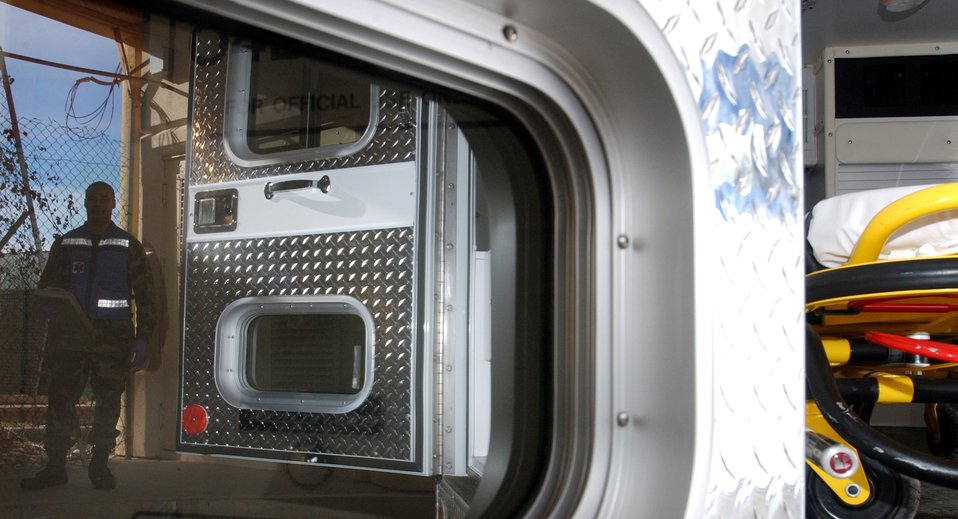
EMT ready

AVIANO AIR BASE, Italy -- Staff Sgt. Donelle Clark checks paperwork before inspecting equipment inside an ambulance here Feb. 15. Sergeant Clark is an emergency medical technician with the 31st Medical Operations Squadron's ambulance service.